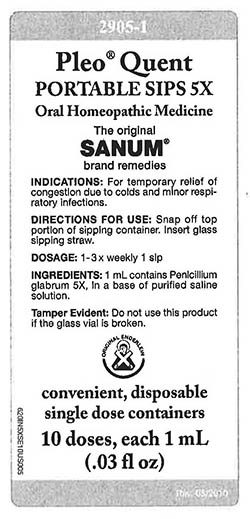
RECALLED – Homeopathic Drug Products

March 18, 2014 – Product Recall – Terra-Medica Issues Voluntary Nationwide Recall of Specified Lots of Pleo Homeopathic Drug Products Due to the Potential for Undeclared Penicillin.